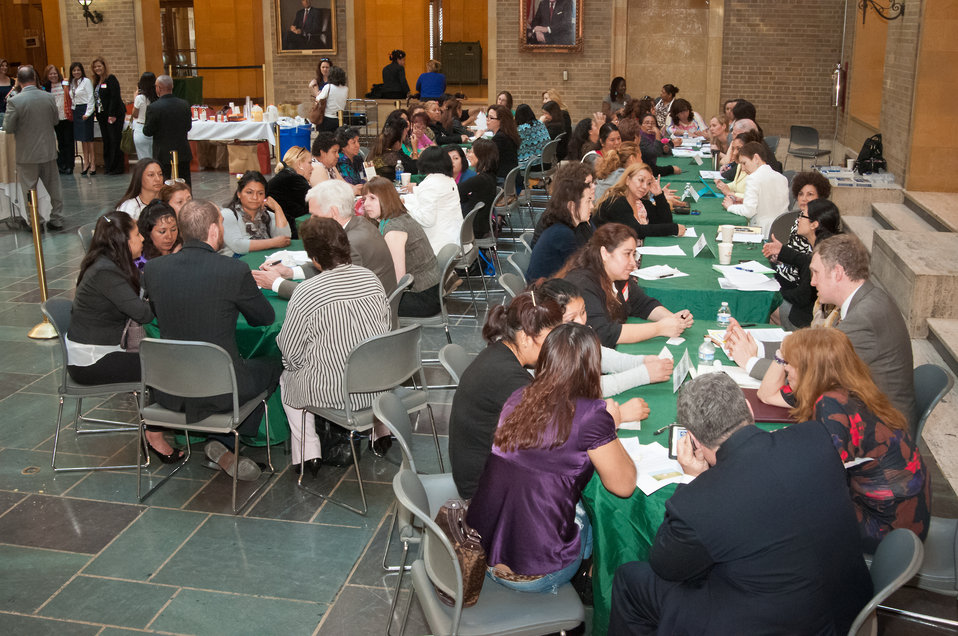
The United States Department of Agriculture (USDA), Office of Advocacy and Outreach hosted a Breakfast Networking Reception with Alianza Nacional de Campesinas an organization for Hispanic Farmworker Women to network and discuss their issues, priorities and opportunities in rural communities throughout the United States in Washington, DC, Tuesday, April 9, 2013. The women were able to speak to representatives from nine Federal agencies with migrant programs: White House, USDA, Department of Health and Human Services (HHS), Housing and Urban Development (HUD), Department of Labor (DOL), Equal Employment Opportunity Commission (EEOC), Department of Education (DOE), Environmental Protection Agency (EPA), and United States Citizenship and Immigration Services (USCIS).